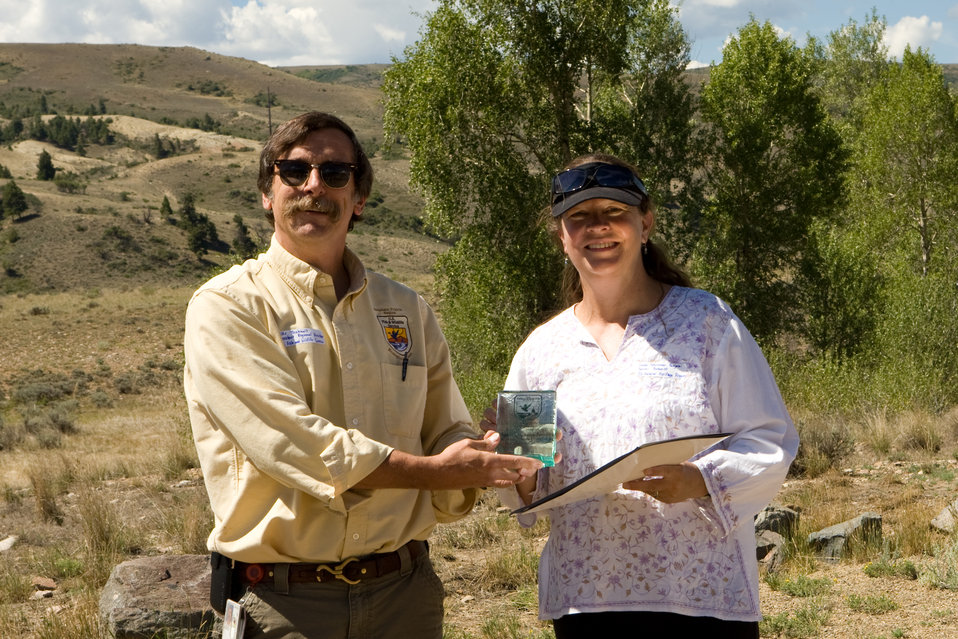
Colorado Rare Plant Conservation Initiative

The Colorado Rare Plant Conservation Initiative (RPCI) is a partnership of 23 statewide and regional agencies, private organizations, and academic institutions working to conserve 121 rare plants in Colorado. As part of these efforts the group developed the Colorado Rare Plant Conservation Strategy, developed Best Management Practices to reduce energy development impacts, addressed climate change, and developed focused strategies for the conservation of individual species at eight priority landscapes. The group has also worked to coordinate volunteer efforts for plant conservation across the state.